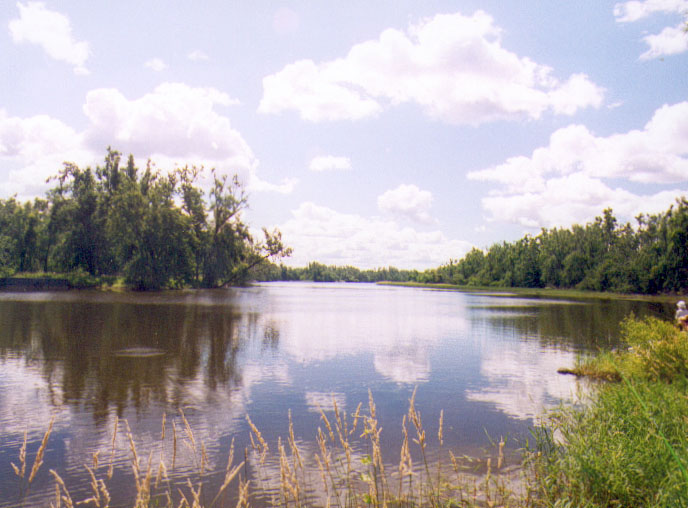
Missisquoi River